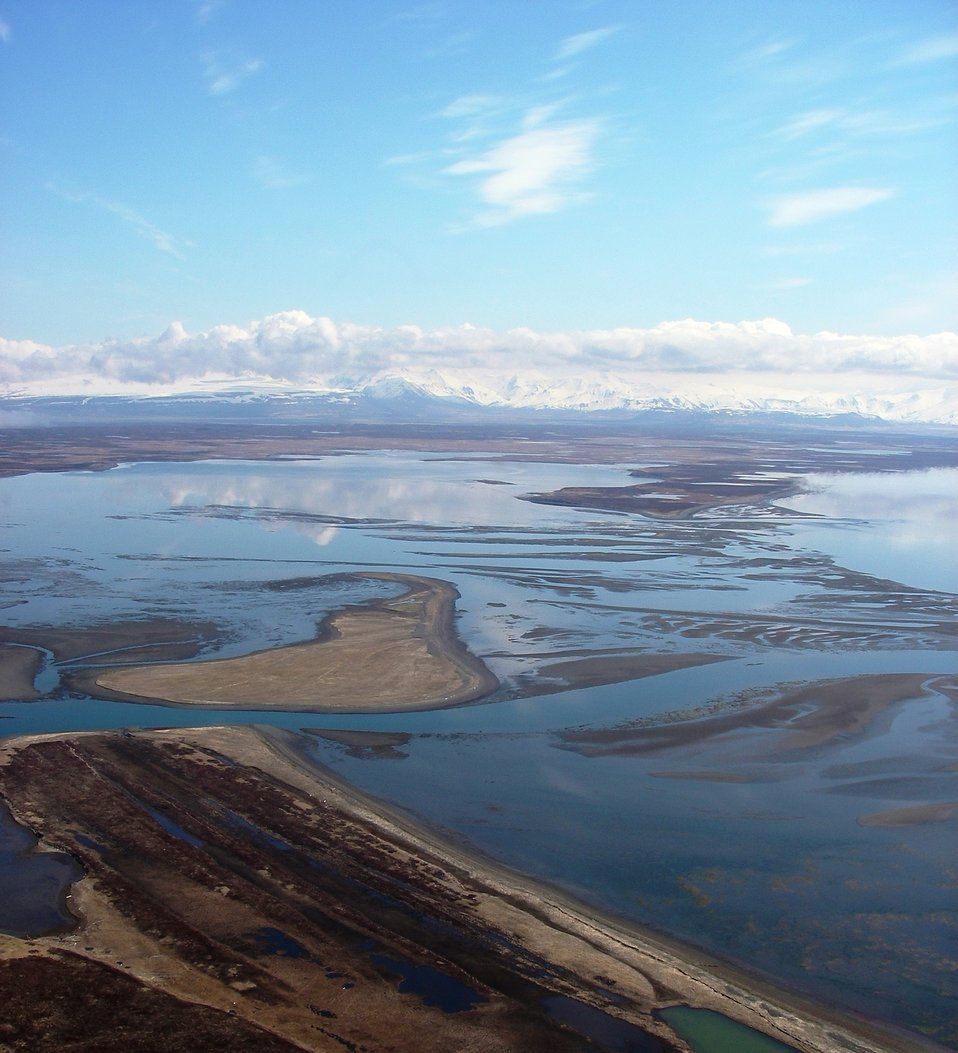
Barrier Islands

Kinzarof Lagoon, Izembek National Wildlife Refuge